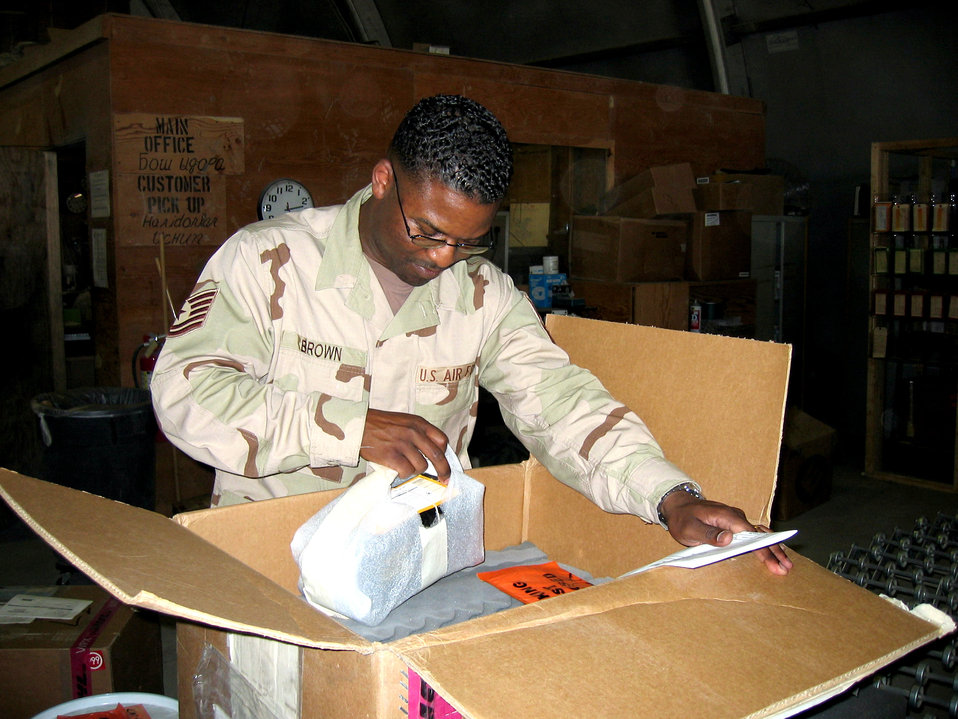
Supply Airmen keep deployed essentials on shelf

KARSHI-KHANABAD AIR BASE, Uzbekistan -- Tech. Sgt. Johnny Brown inspects a shipment for accuracy and contraband. He is the 416th Expeditionary Mission Support Squadron's supply section superintendent and is deployed from Royal Air Force Mildenhall, England.